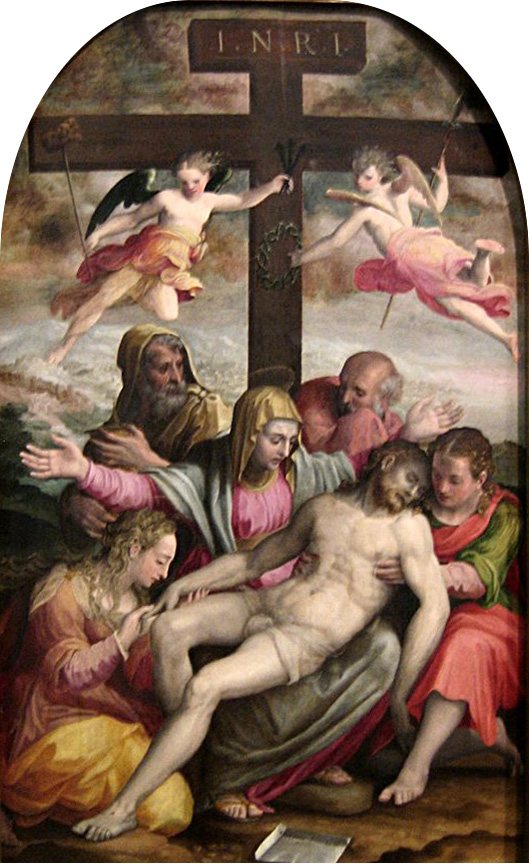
'The Deposition', oil on poplar panel by Prospero Fontana, 1563, Art Gallery of New South Wales